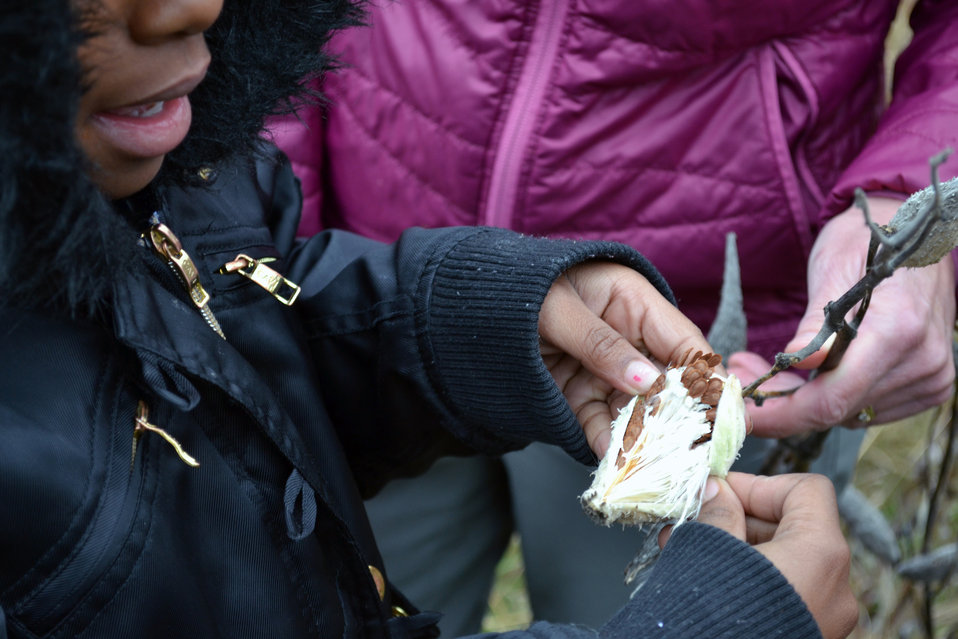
Future Monarch Butterfly Habitat

Thinking ahead to our next butterfly garden at Minnesota Valley National Wildlife Refuge.